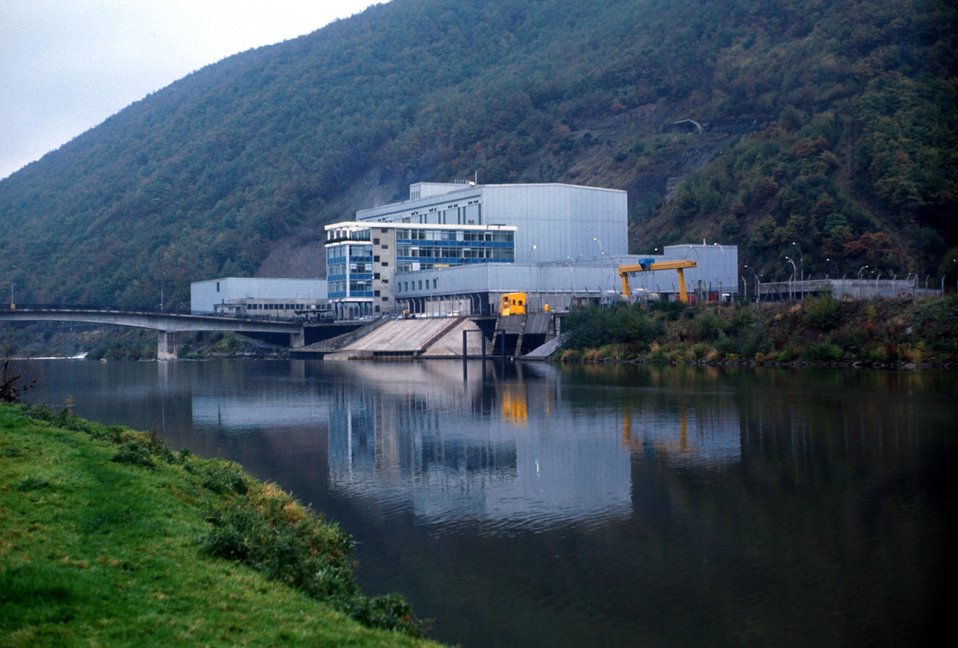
France -- Sena Nuclear Plant.